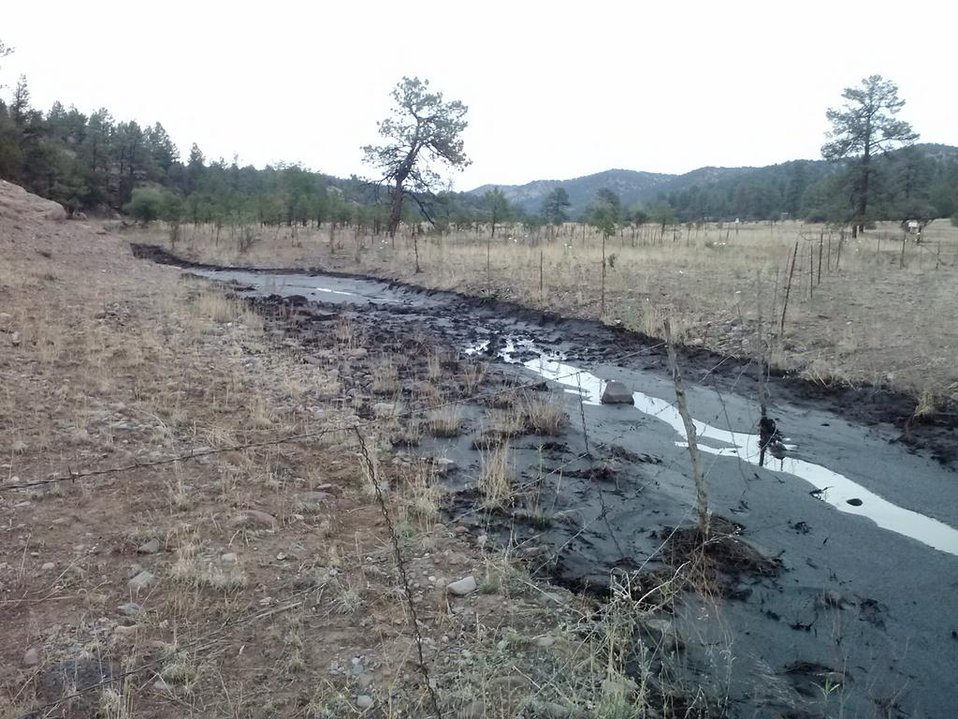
Ash flows into the Mimbres River as result of Silver Fire near Kingston, NM. The Silver Post Fire response has the Burned Area Emergency Response (BAER) team beginning operations to seed acres of high burn severity and to mulch additional acres. Seeding reduces effects to downstream life, property, and infrastructure by reducing erosion and runoff. Areas of high burn severity are to be seeded with a quick germinating, non-persistent annual cereal barley that would provide rapid ground cover. A small percentage of native perennial species would also be included to give the burned area a jump start in natural recovery, and provide for long-term ground cover. Mulch is the most effective treatment for controlling erosion and runoff, as it provides immediate ground cover. Mulch also assists in stabilizing soil in and around these areas.